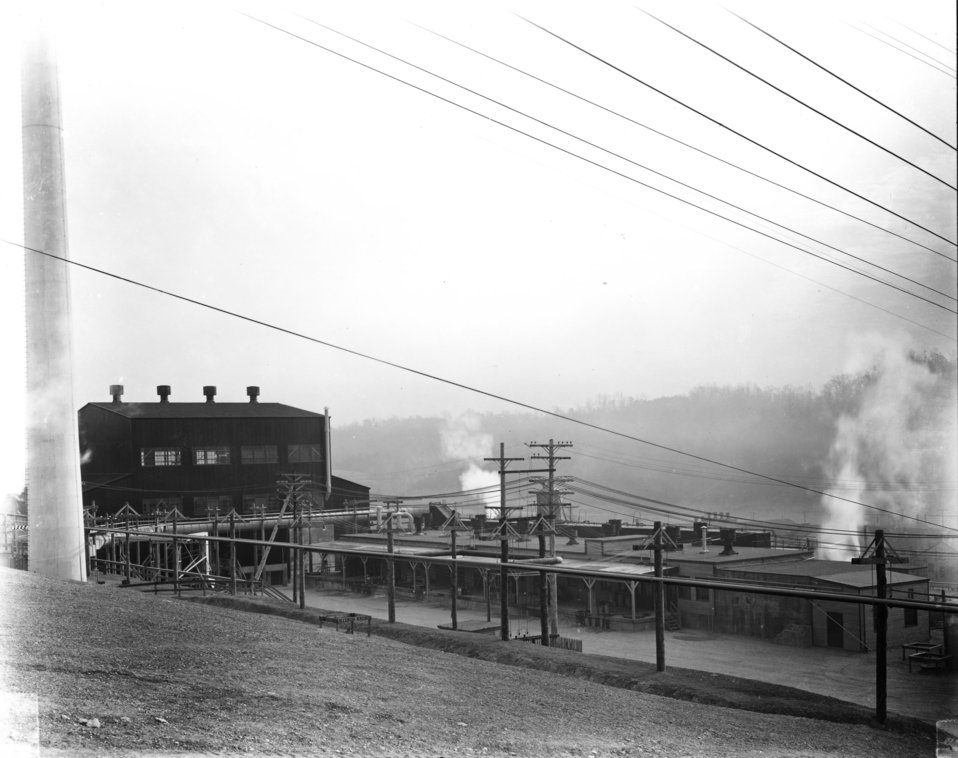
X-10 at Oak Ridge